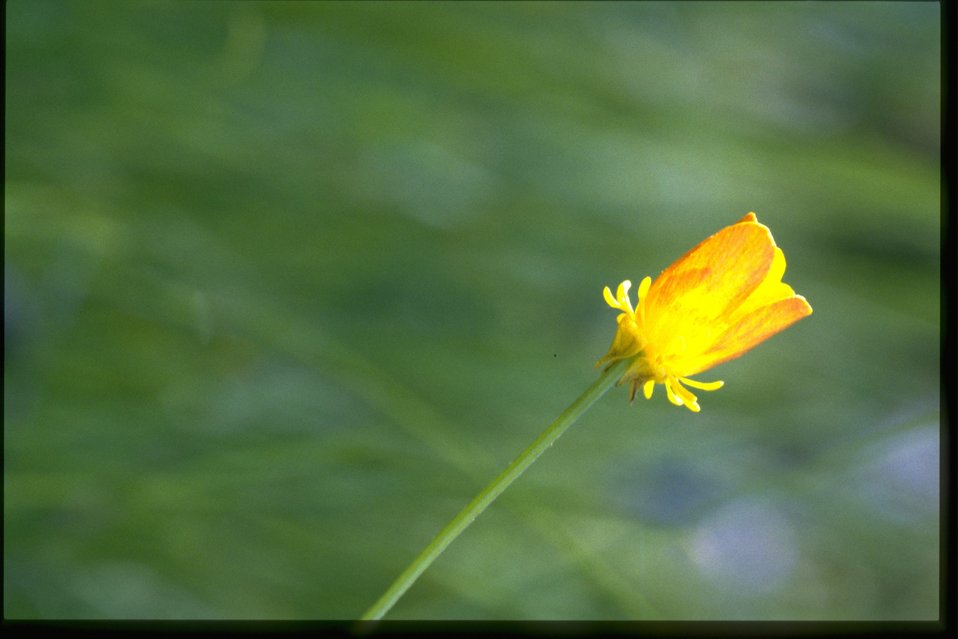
Medium shot of Ranunculus.